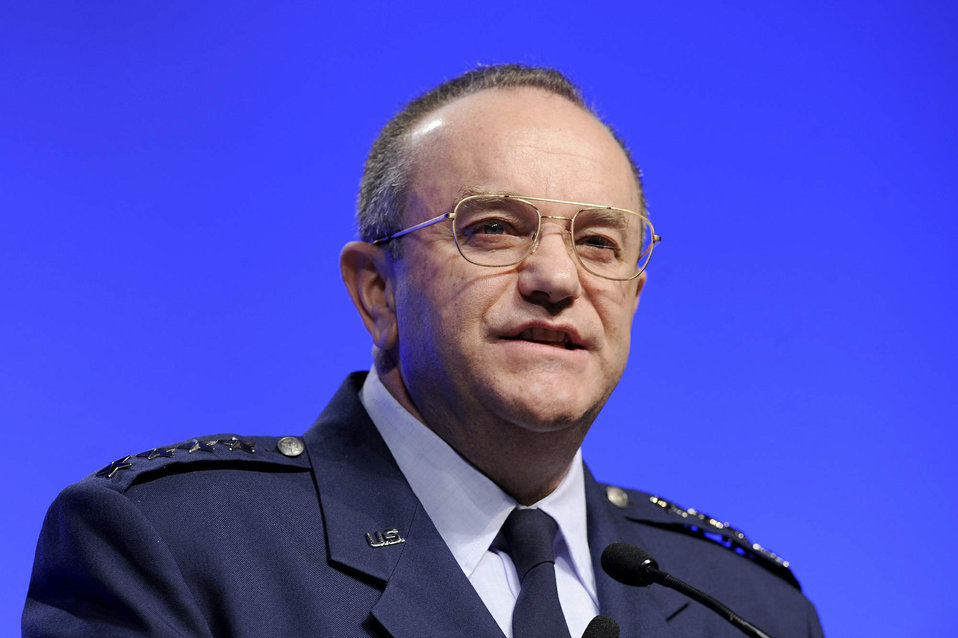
Vice CSAF

Air Force Vice Chief of Staff Gen. Philip M. Breedlove speaks Feb. 17, 2011, during the Air Force Association's 2011 Air Warfare Symposium and Technology Exposition in Orlando, Fla. General Breedlove joined Chief Master Sgt. of the Air Force James A. Roy and other Air Force speakers in addressing the symposium attendees.